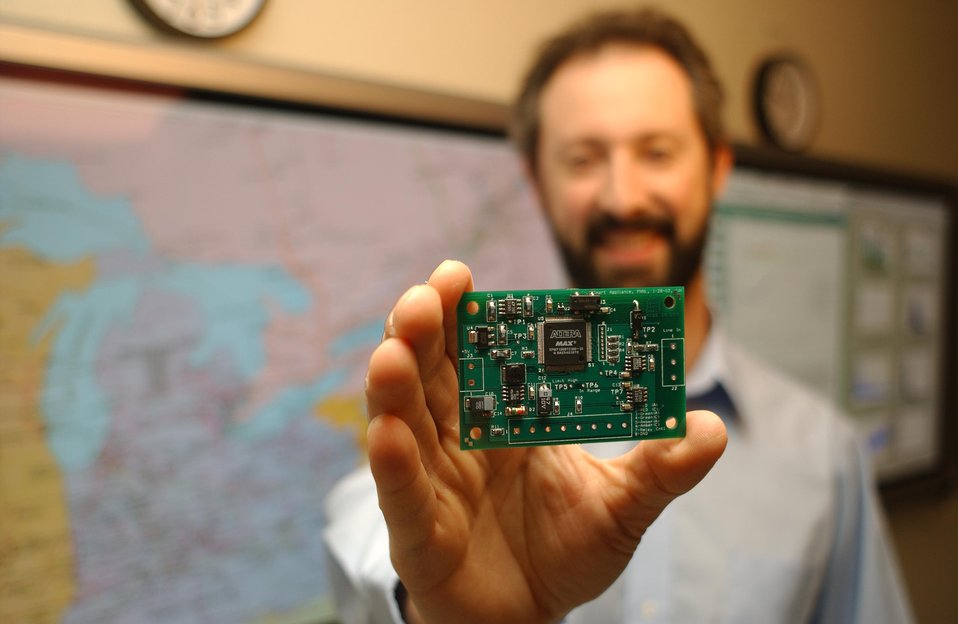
GRID FRIENDLY APPLIANCE CONTROLLER, IS A PLAYING-CARD-SIZED INTEGRATED CIRCUIT DEVELOPED BY RESEARCHERS AT PACIFIC NORTHWESTERN NATIONAL LABORATORY.

The circuit board would turn normal household appliances into ones that would better regulate energy usage and help prevent local and national blackouts. It is a two by two-and-a-half inch circuit board, is at the heart of Grid Friendly appliances. Installed in refrigerators, air conditioners, water heaters and various other household appliances, this device would monitor the power grid and turn appliances off for a few seconds to a few minutes in response to power grid overload. When power plants cannot generate enough power to meet customer's needs, Grid Friendly appliances reduce some of the load on the system to balance supply and demand. Consumers will benefit from avoided blackouts and from lower electric rates since they won't have to pay for unneeded backup power plants. It could help stabilize power grids and prevent outages. By triggering appliances to turn on or off at different times, this device could help control power oscillations that occur in different parts of the grid.